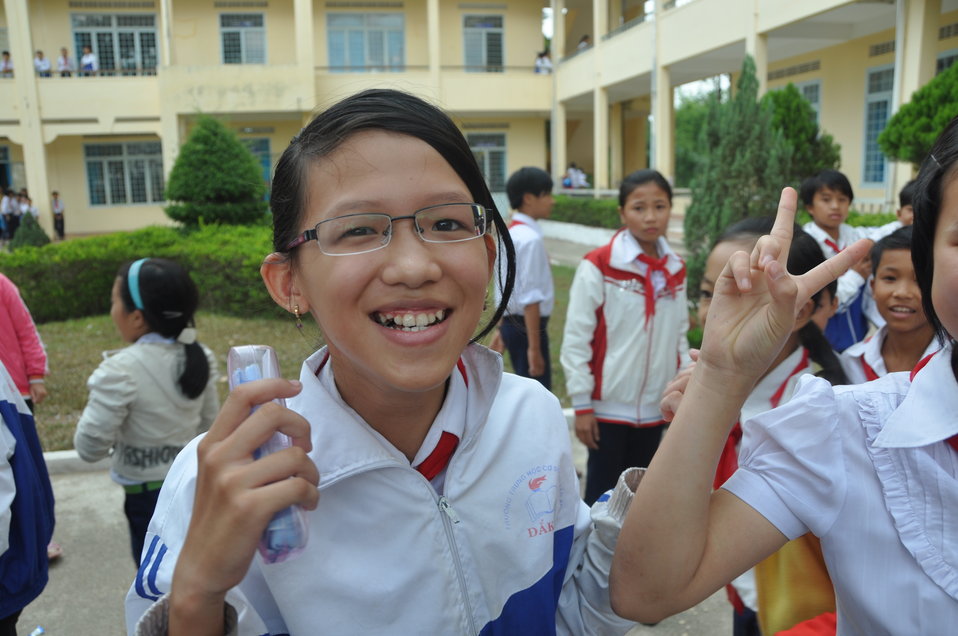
USAID and partners support eyecare, glasses, in Kon Tum

Eyeglasses examination at Luong The Vinh School, Kon Tum Province